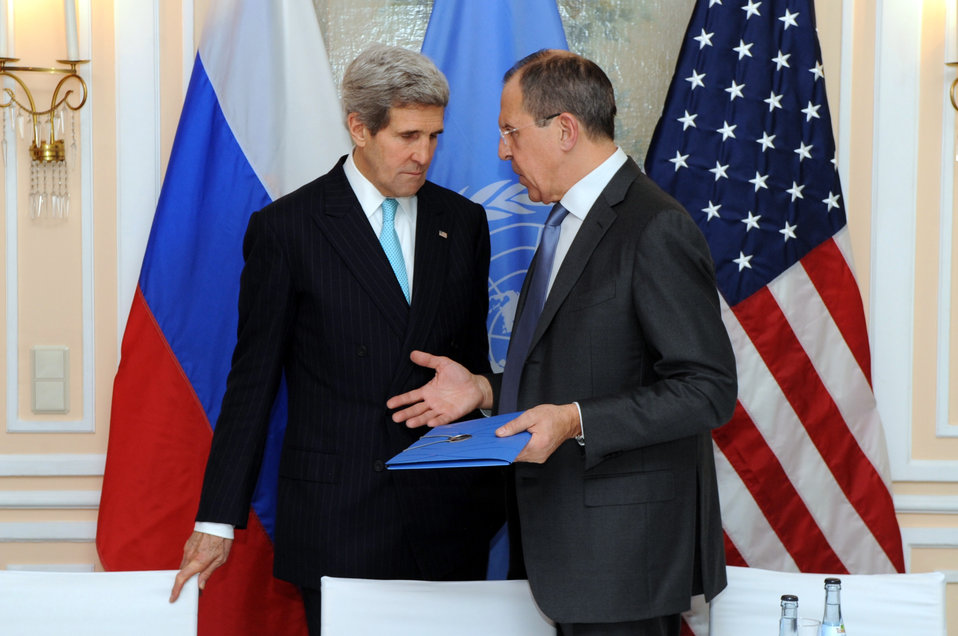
Secretary Kerry Speaks With Russian Foreign Minister Lavrov at Munich Security Conference

U.S. Secretary of State John Kerry speaks with Russian Foreign Minister Sergey Lavrov before a meeting with United Nations Secretary-General Ban Ki-moon on the sidelines of the Munich Security Conference in Germany on January 31, 2014.